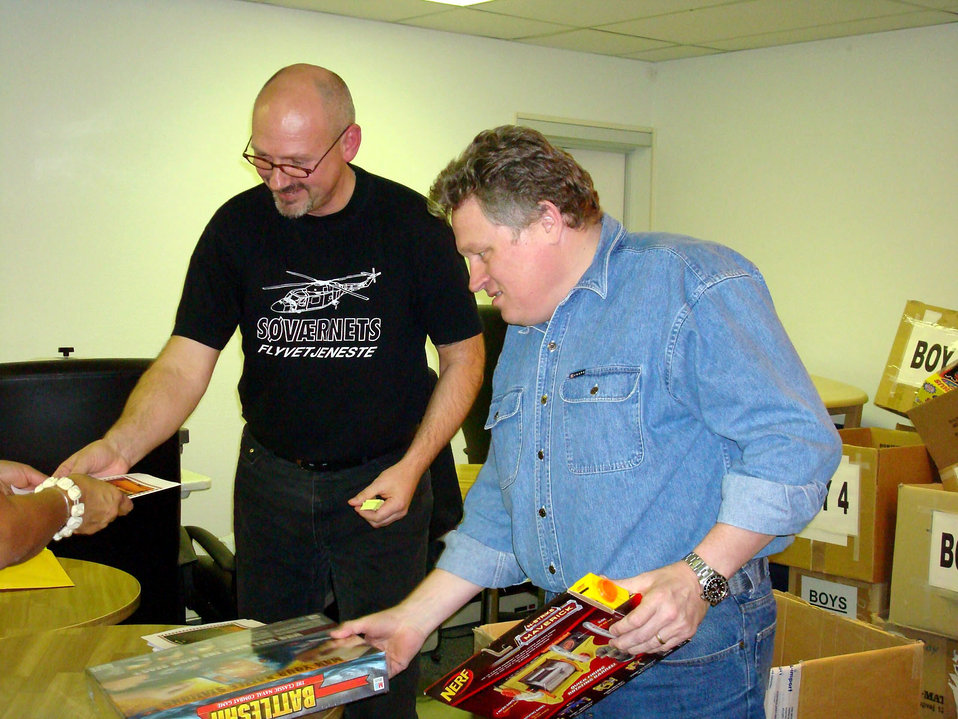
Season of giving extends throughout the year at top of the world

Navy Chief Petty Officers Soren Pedersen and Lars Iversen, Danish liaison office at Thule Air Base, distribute gifts to Team Thule members during an evening of gift wrapping at the community center. The gifts were purchased with money raised from the base's on-going charity drive, Operation Julemand, and will be distributed to children in four local villages.